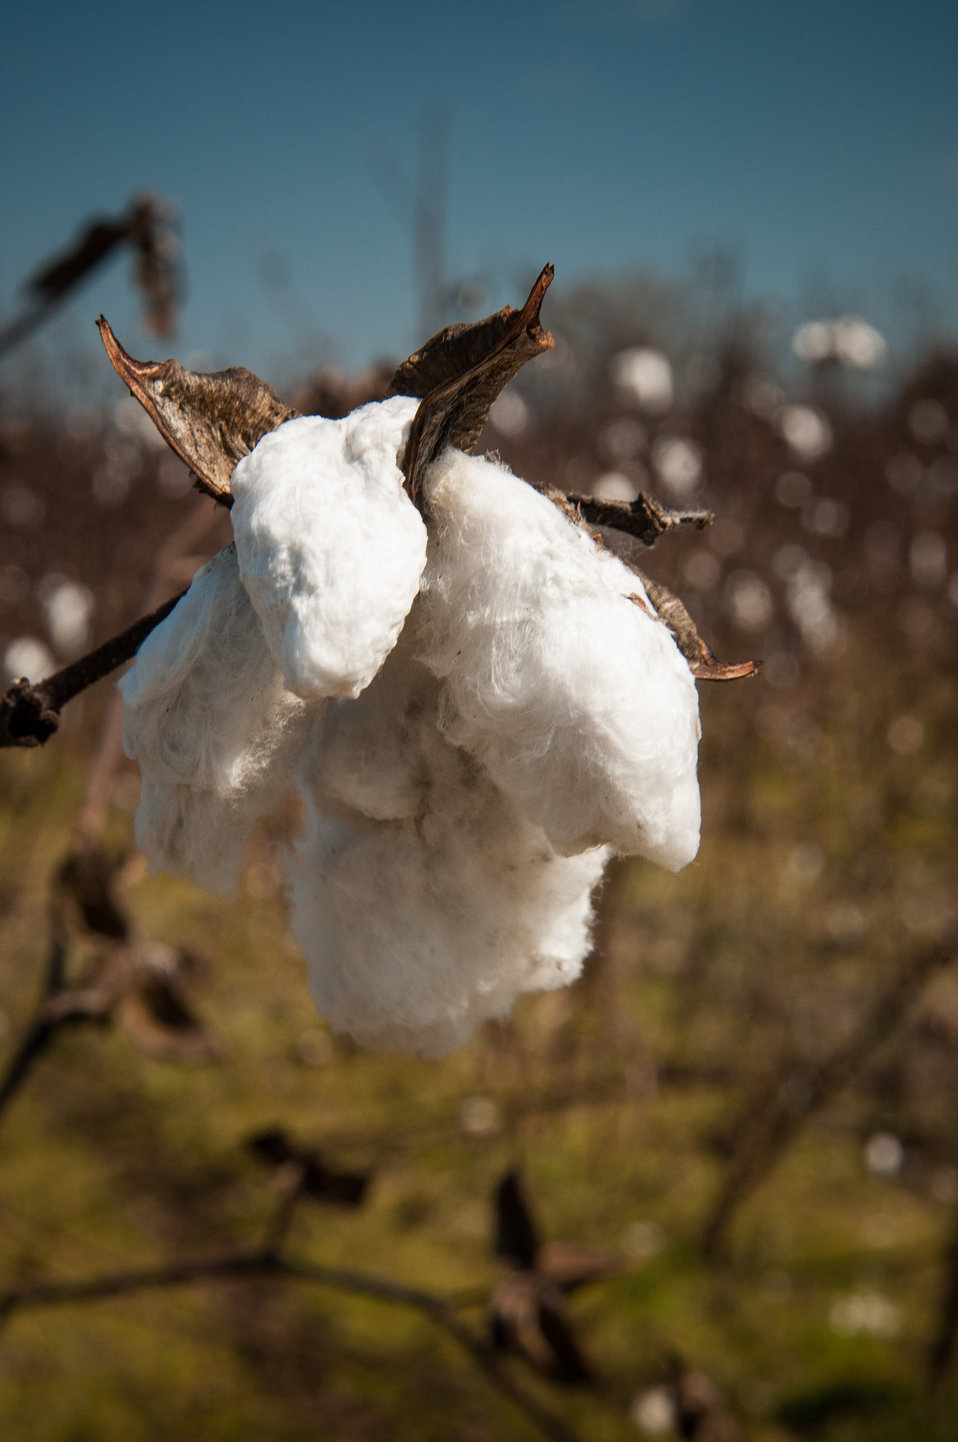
Georgia cotton grows in Dooly County, GA on Mar. 6, 2013. The cotton harvest in Georgia is normally from September through early November. Dooly County has been designated as a U.S. Department of Agriculture (USDA) Strike Force Initiative county selected to receive assistance to relieve persistent poverty in high poverty counties.